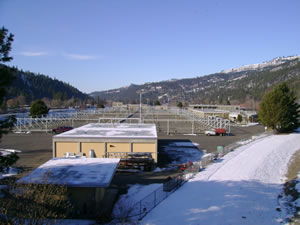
Dworshak National Fish Hatchery

A view of Dworshak National Fish Hatchery in the winter.